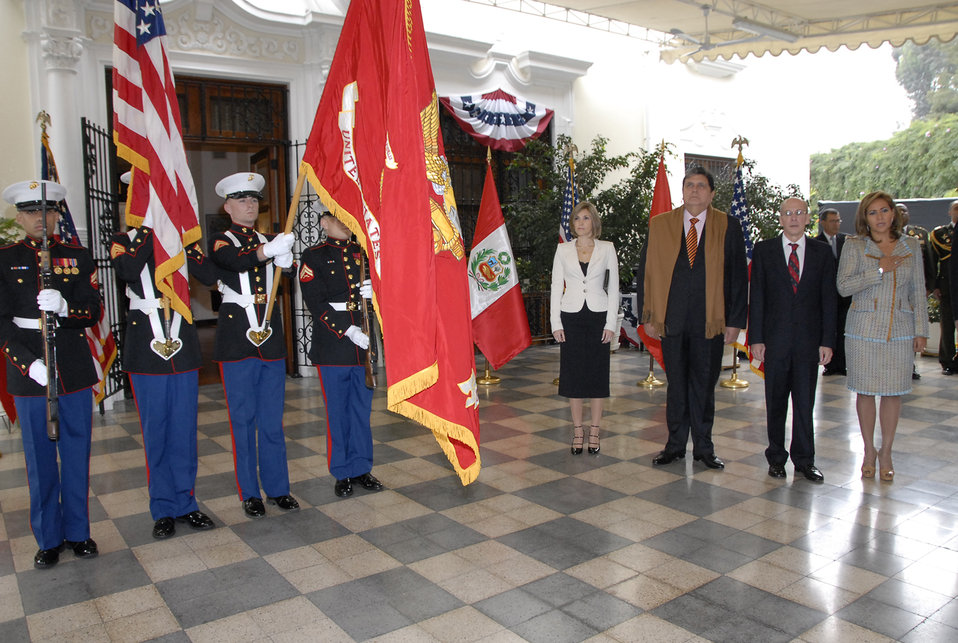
U.S. Marine Corps Color Guard Present the Colors

The U.S. Marine Corps Color Guard present the colors during the U.S. Independence Day celebration at the U.S. Embassy Lima in Peru on July 4, 2010. Also featured in the photo (left to right) are Josefina Garcia Nores, Peruvian President Alan Garcia Perez, U.S. Ambassador to Peru Michael McKinley, and his wife, Fatima McKinley.